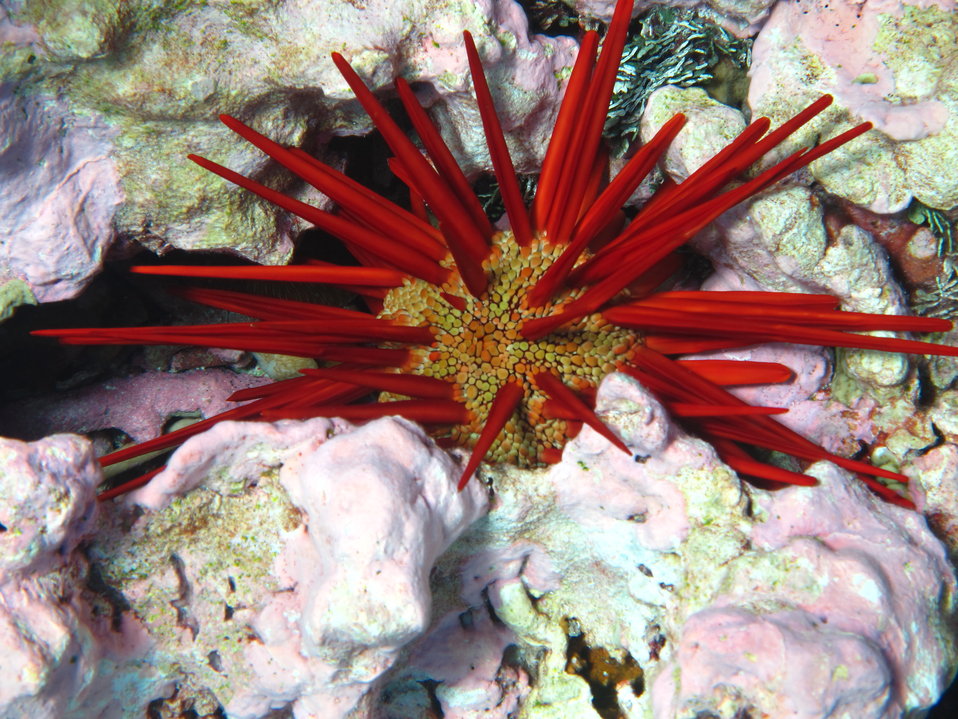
A pencil urchin is found among the coral at Kingman Reef National Wildlife Refuge.